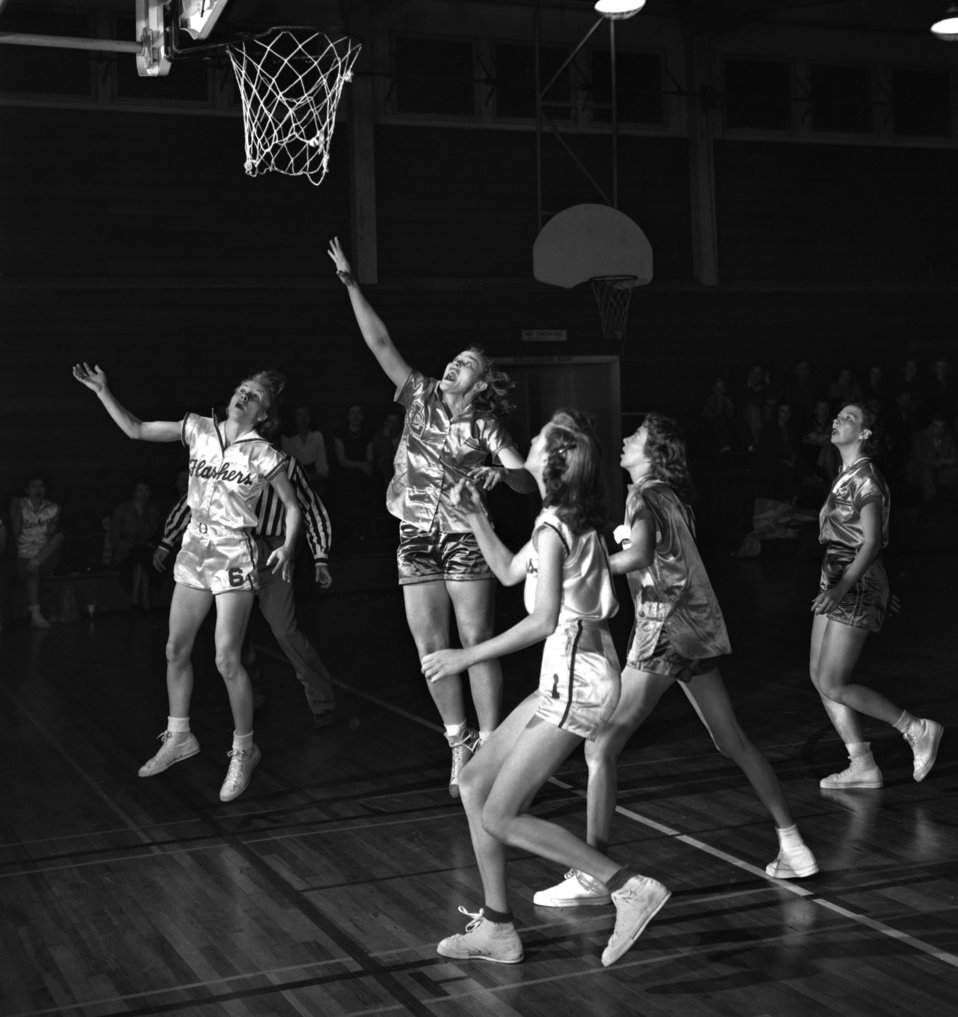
Women's Basketball Monsanto Vs. Maryville

4221b Oak Ridge Tennessee 1-3-1948 DOE photo by Ed Westcott